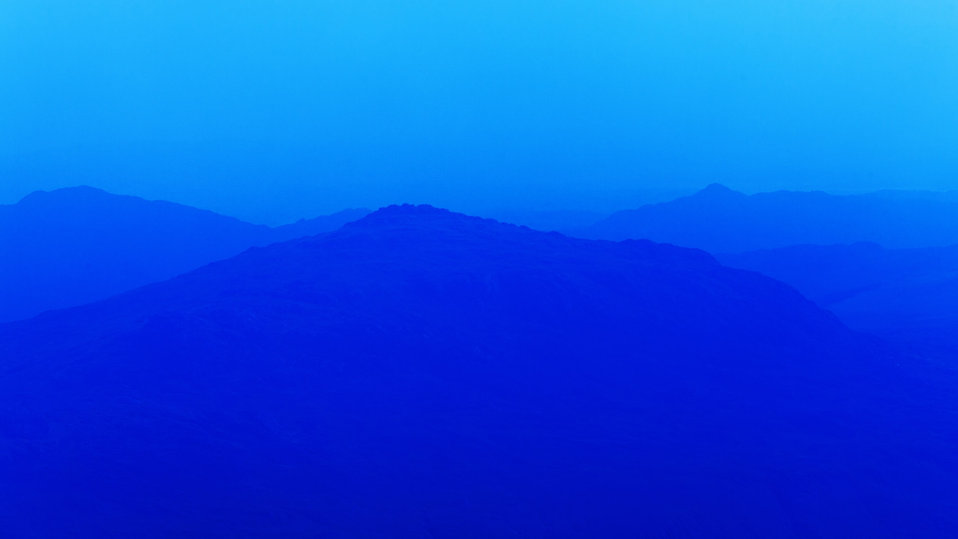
Mountain silhouettes

Blue mountain silhouettes.